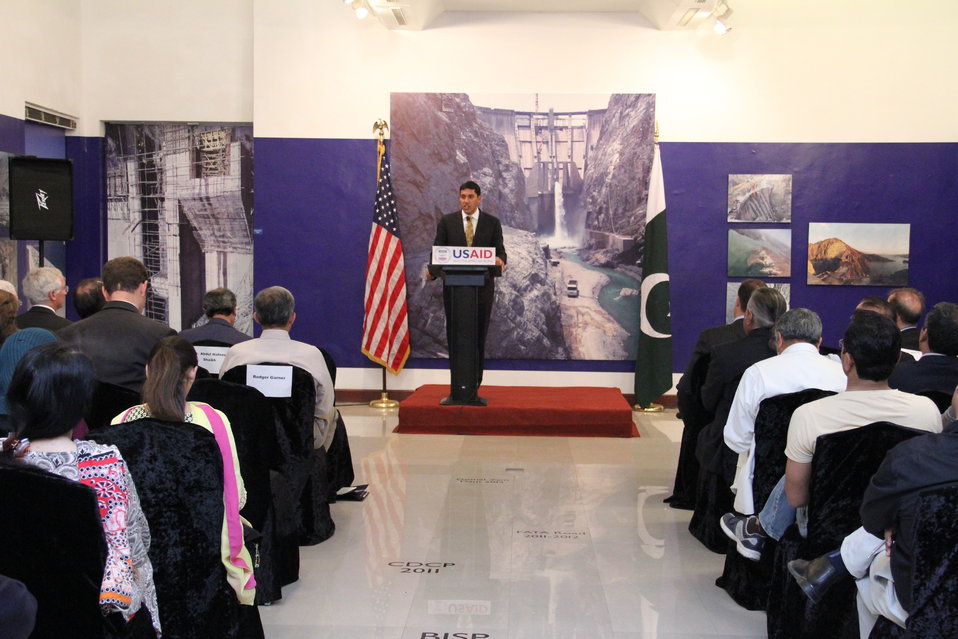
Photo Exhibition Celebrate US-PAK Cooperation at PNCA, Islamabad on April 13, 2012

Dr. Rajiv Shah, Administrator of the USAID addressing the media